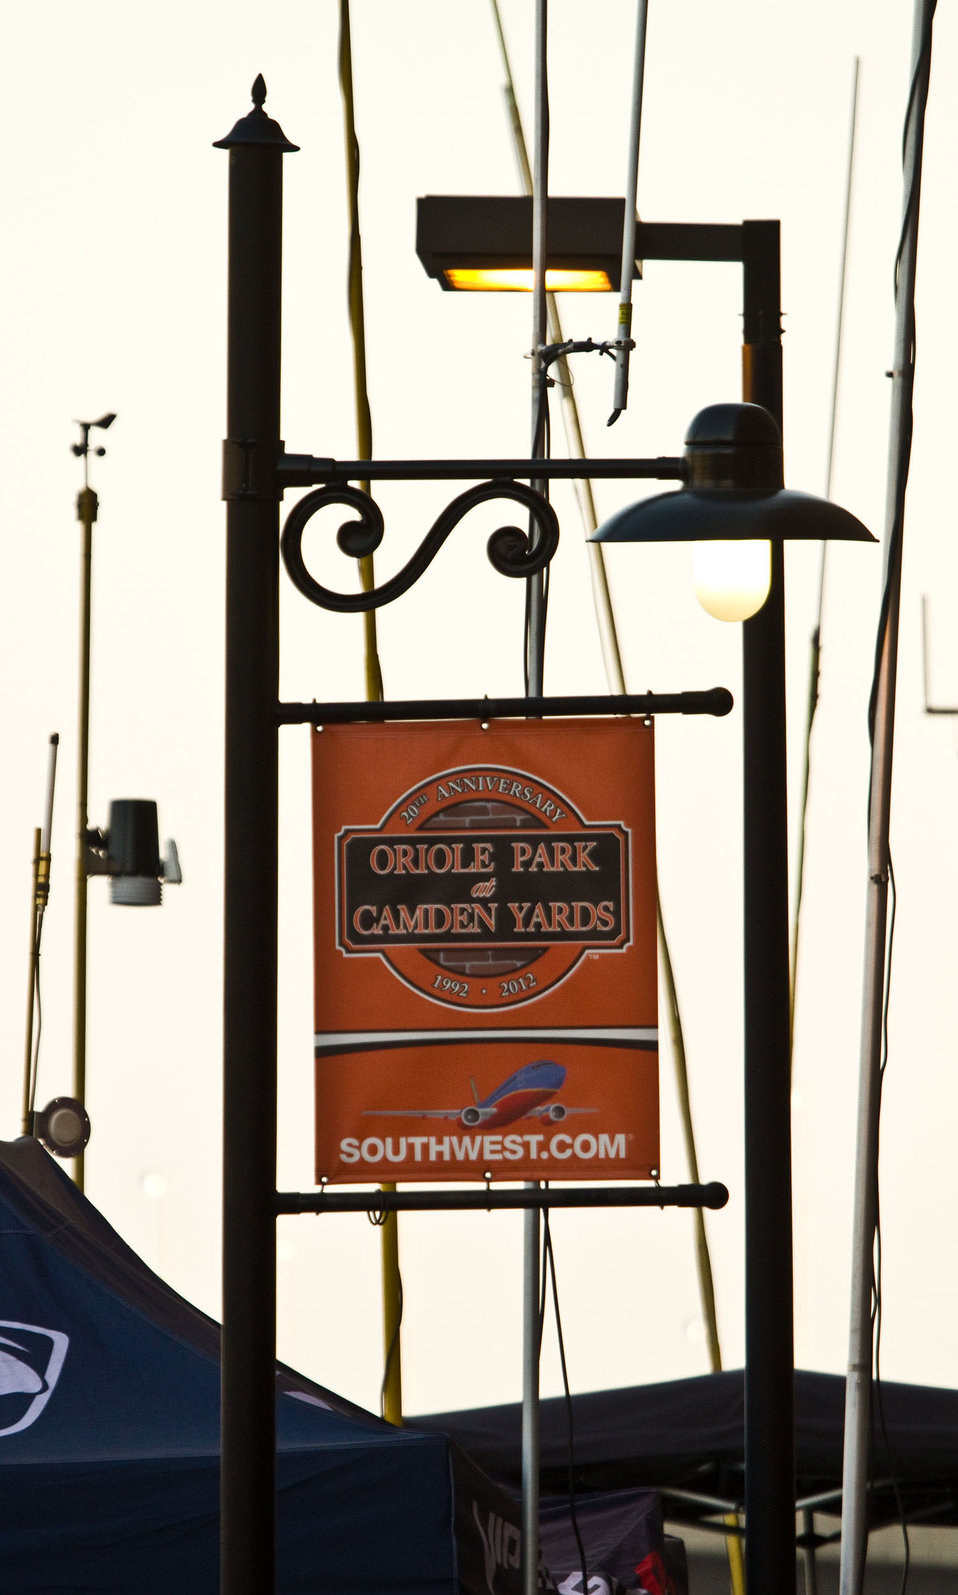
Weather stations and communication antenna masts extend high above team telemetry stations along the Camden Yard Warehouse row, during the Baltimore Grand Prix, centered in and around the Baltimore Convention Center and Camden Yards of downtown Baltimore, MD, during the 2012 Labor Day Weekend. One of the race series held at this Grand Prix is the American Le Mans Series (ALMS), who says it is “the Global Leader in Green Racing the only racing series recognized to comply with the Green Racing protocols developed by the U.S. Department of Energy (DOE), the U.S. Environmental Protection Agency (EPA) and Society of American Engineers International (SAE).” Instead of high-octane gasoline all the cars in the series use one of 5 different forms of energy (system). Clean diesel, E85, E10, isobutanol or hybrid energy technology. The specific hybrid system, used by the Porsche GT3 cars, is a (battery-less) flywheel-based Kinetic Energy Recovery Systems. These organizations are accelerating technology development at speeds up to 200 mph, in 650-700 horsepower race cars that are based on two groups of cars; the purpose built prototype race cars and the GT (Grand Touring) cars based on production sports cars seen in showrooms. From these groups, there are five classes of cars, all of which race simultaneously during the race events.

The U.S. Department of Agriculture (USDA) focuses on renewable fuel sources that are profitable and sustainable. 2011 accomplishments include research and planning for renewable energy and investments in renewable energy production.
- Completed a Biofuels Roadmap proposing a plan of action to meet congressionally mandated RFS2 goals for national biofuels production.
-Coordinated five regional research centers to work on the science necessary to ensure profitable biofuels can be produced from a diverse range of feed stocks across the nation, not just in the Midwest where the industry is already thriving.
-Over three years, USDA invested about $320 million to accelerate research on renewable energy ranging from genomic research on bioenergy feedstock crops, to development of biofuel conversion processes and costs/benefit estimates of renewable energy production.
- More than 130 biodiesel and ethanol projects funded by USDA are currently producing almost 3.7 billion gallons of biodiesel and ethanol annually, enough fuel – in equivalence to gasoline – to keep five million vehicles on the road every year.
-We are supporting efforts to build five biorefineries to produce advanced biofuels in states from Florida and Michigan to New Mexico, with investments worth about $310 million. We are supporting facility upgrades and feasibility studies for advanced biofuels projects in every region of the country.